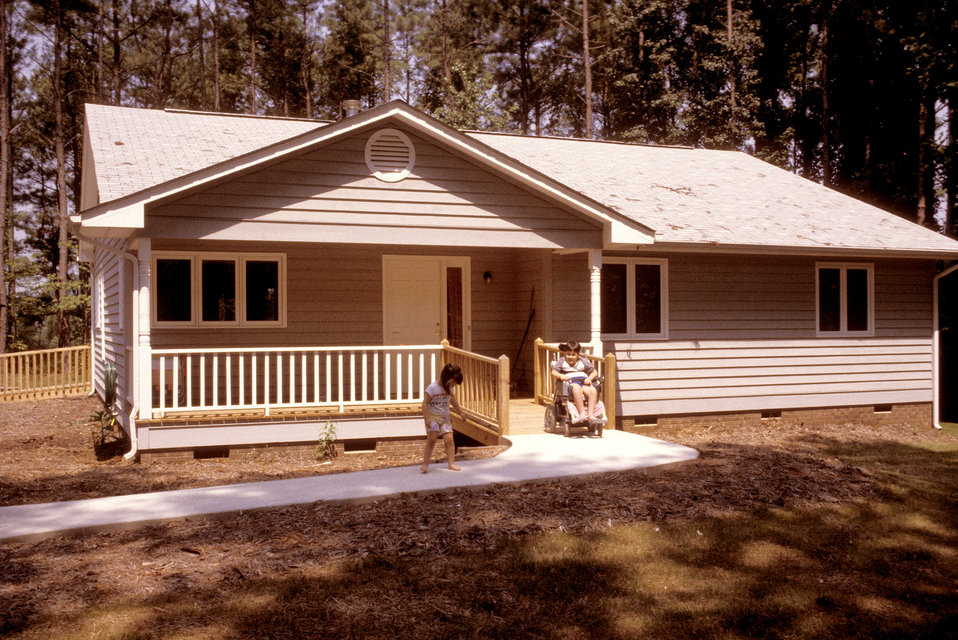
This is one of six images, (PHIL# 9155 - 9160), depicting the exterior of a small, wood frame, clapboard, single story house with a smooth, concrete pathway to the front porch. The porch was roofed, and was level with the first floor of the house. The pathway to the front door crossed a small, railed bridge in order to establish and maintain the proper drainage swale along the front of the house. In this image, a young wheelchair-seated boy was emerging from the porch unto the concrete pathway on which was standing his young sister. A retaining wall supported the earth berm upon which the pathway sat. The projection of a small ramp could be seen, on the left, at the rear of the house. The front door has a full-height sidelight window. This type of stepless, universal entrance avoided the construction, slopes, and maintenance issues of ramped entrances, thereby, avoiding the unattractive and stigmatizing appearance of most ramps.